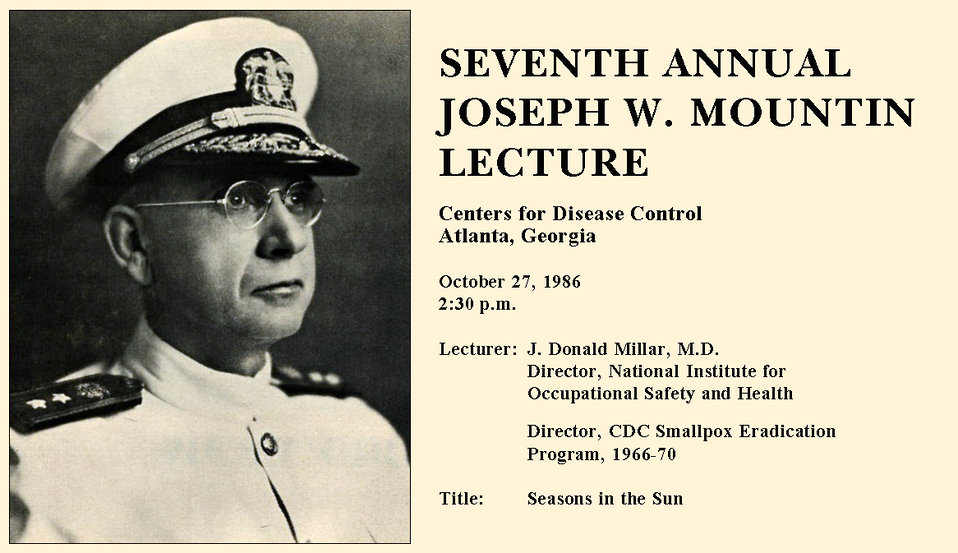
This was the 1986 announcement of the Seventh Annual Joseph W. Mountin Lecture featuring J. Donald Millar, M.D., D.T.P.H. as the lecturer.